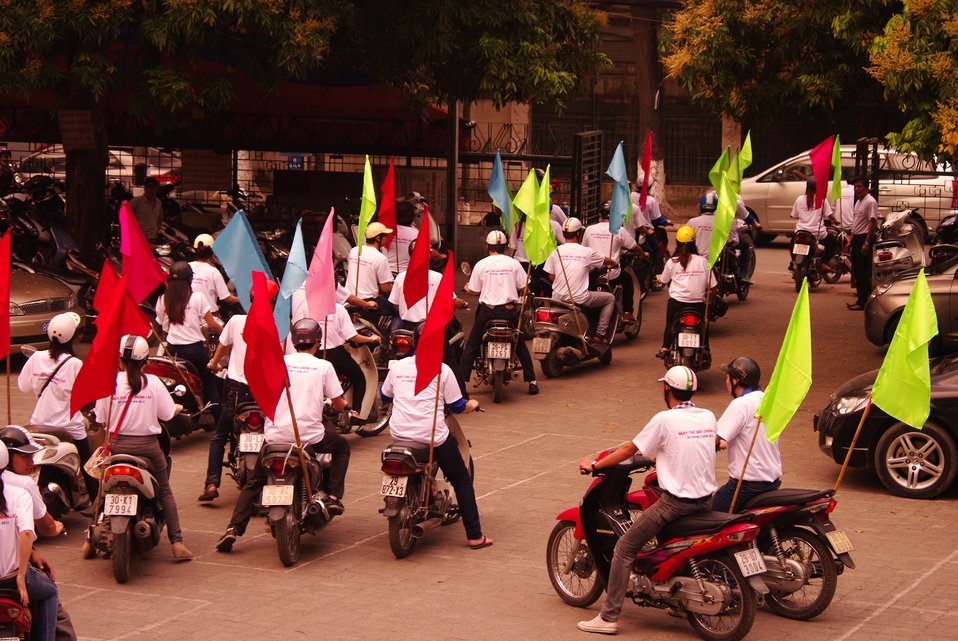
World TB Day in Hanoi: Students take to the streets with the message: Let's Stop TB in our Lifetime

March 23, 2013